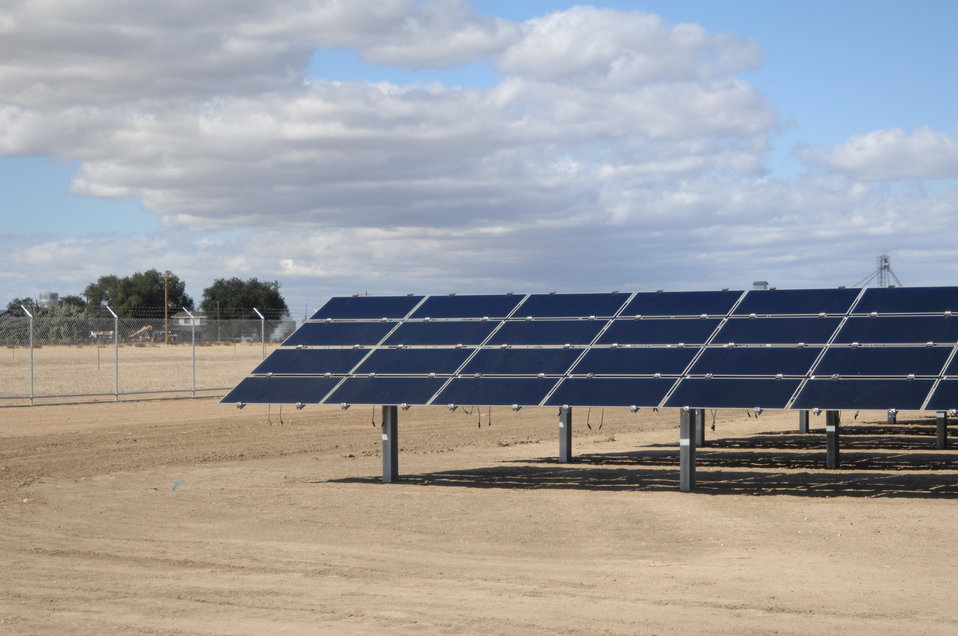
Solar Panels at Topaz Solar 3